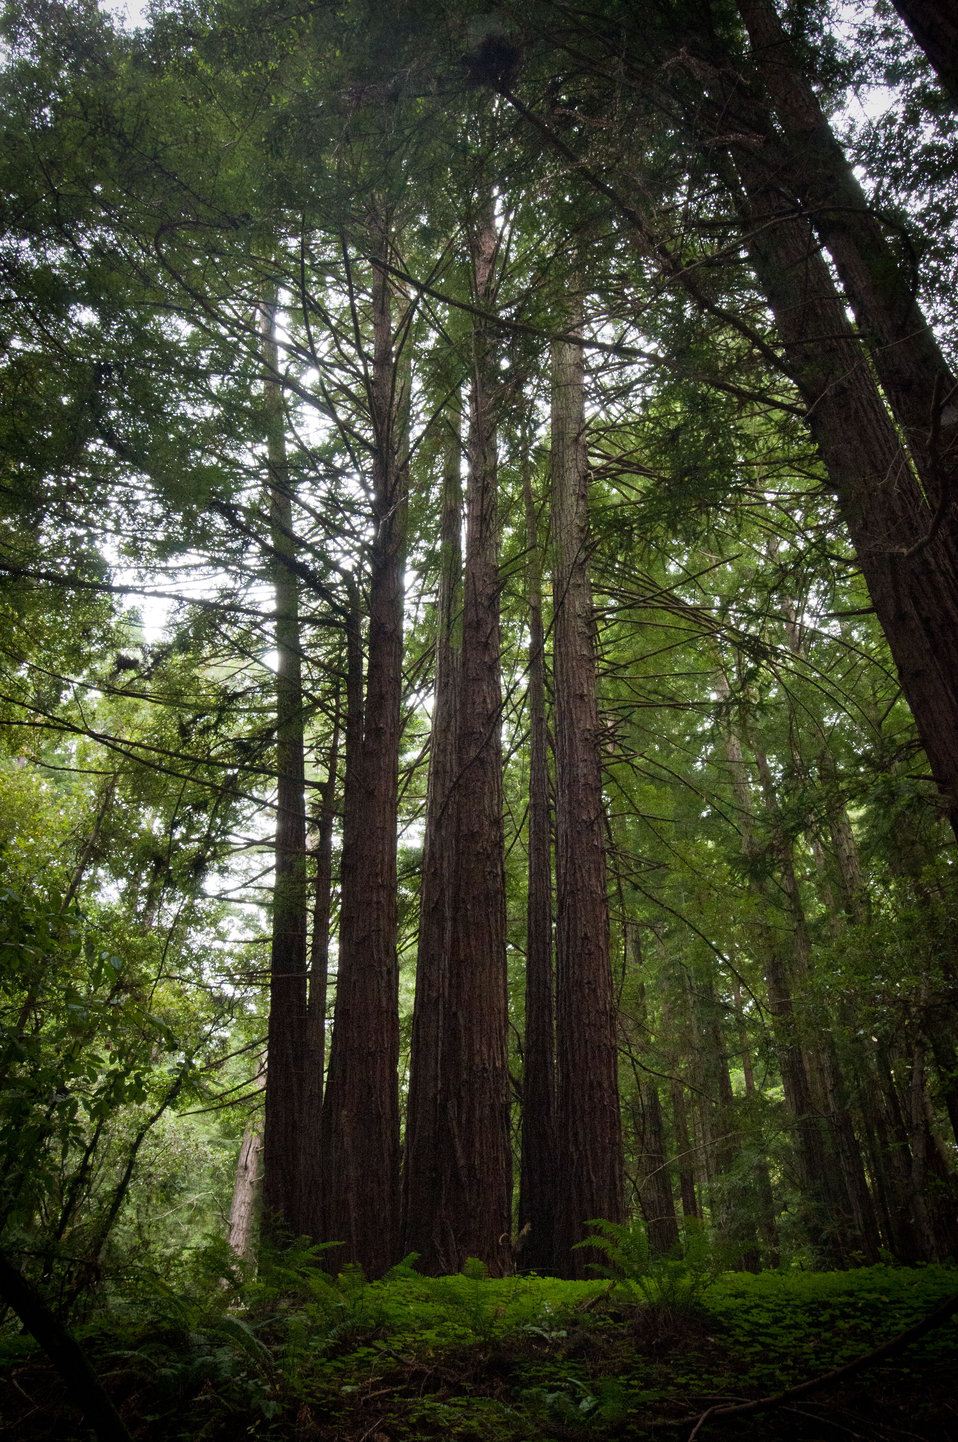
Cathedral growth redwood trees in a private forest in Santa Cruz County, CA, on Friday, June 17, 2011. Cathedral trees are a group of redwoods that grow in a circle around a host stump or tree, from which they sprouted. Assisting landowners when they want help in the management of their private forest is a factor in the America’s Great Outdoors Initiative (AGO).